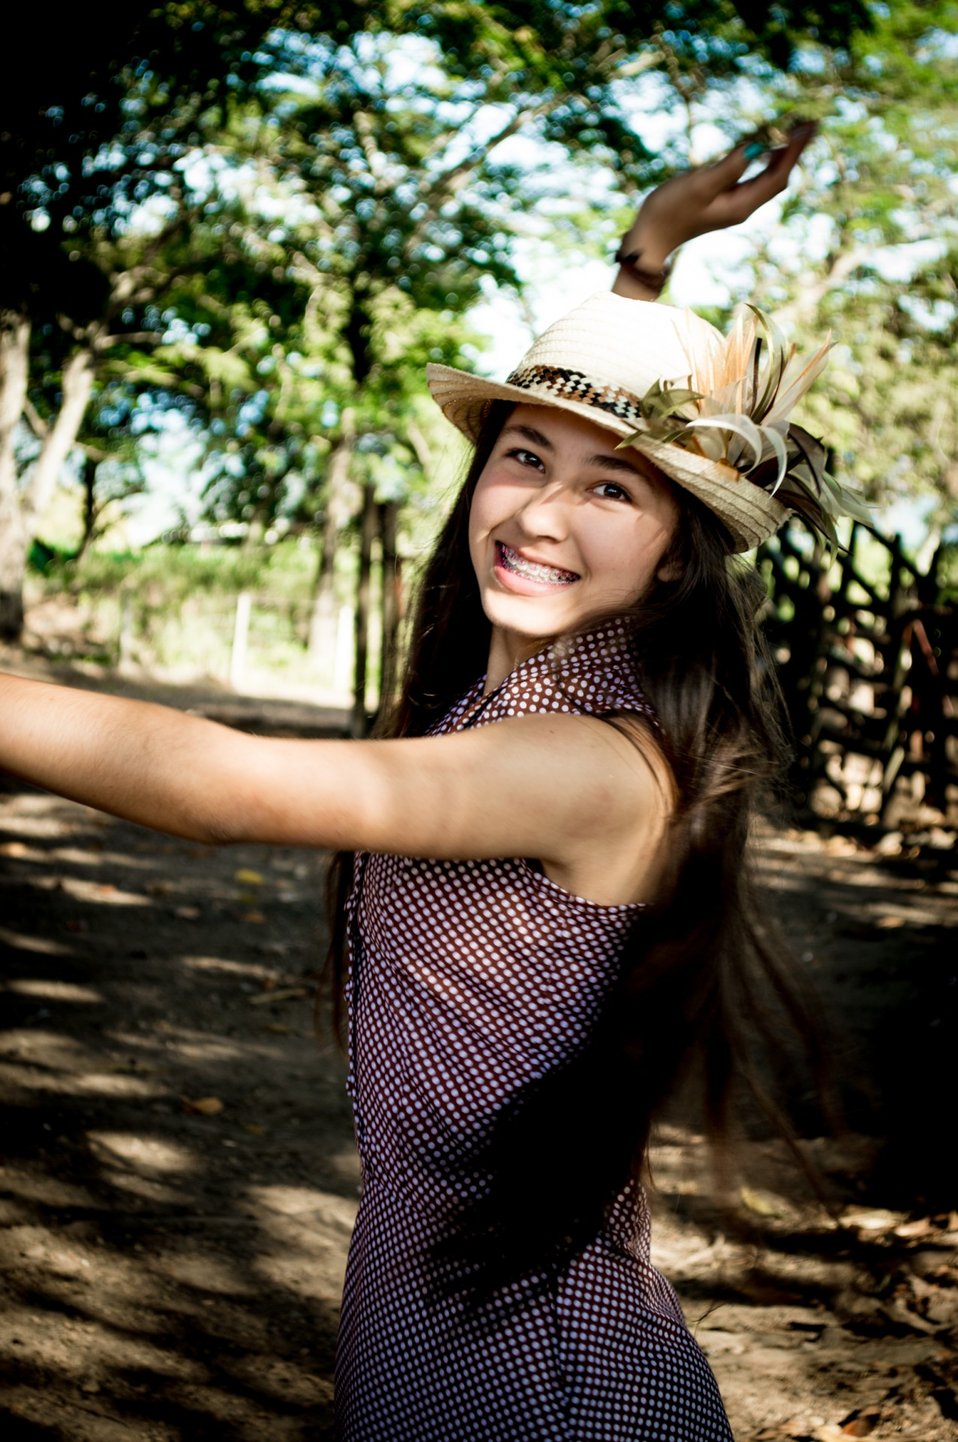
Freedom

Is a happy and free woman.